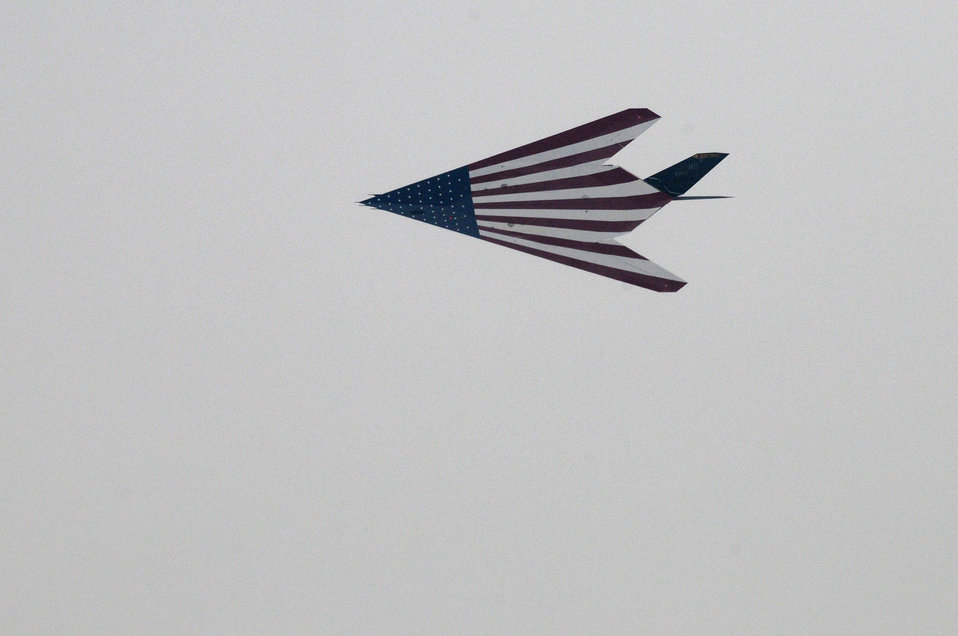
F-117 retires

An F-117 Nighthawk performs a flyover through the fog during the conclusion of the F-117 Nighthawk farewell ceremony at Wright-Patterson Air Force Base, Ohio, March 11.